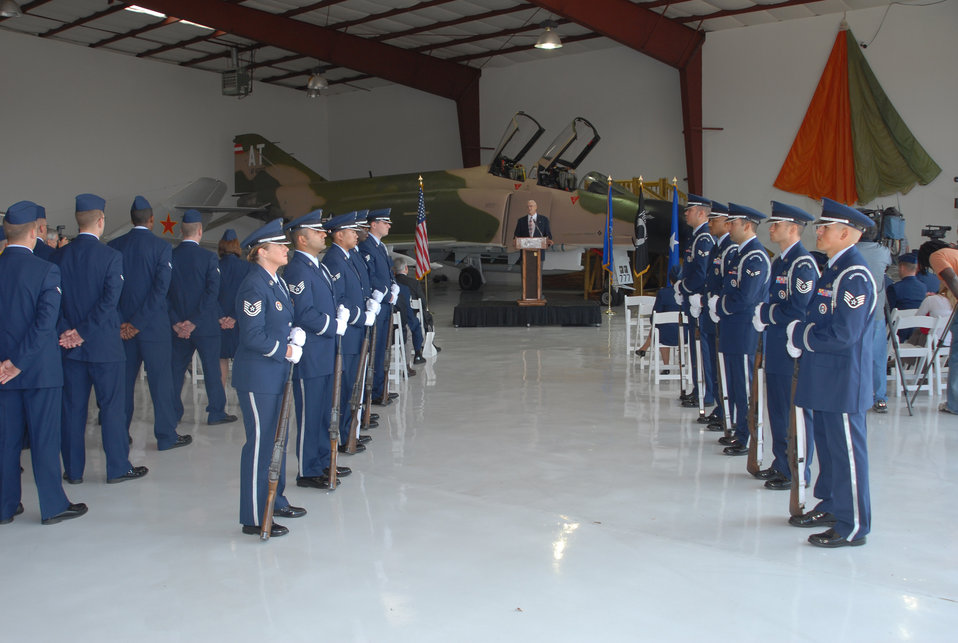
Ring is returned

Retired Col. James Hivner addresses an audience of Airmen, family and friends Nov. 11 at the Cavanaugh Flight Museum in Addison, Texas, after receiving the wedding ring that was confiscated by the North Vietnamese in 1965. The colonel's ring was found recently and eventually passed to retired Navy Cmdr. Rick Tolley who searched for its owner until he found Colonel Hivner. An honor guard and Airmen from Sheppard Air Force Base, Texas, made the trip to the museum to witness the return of the ring.